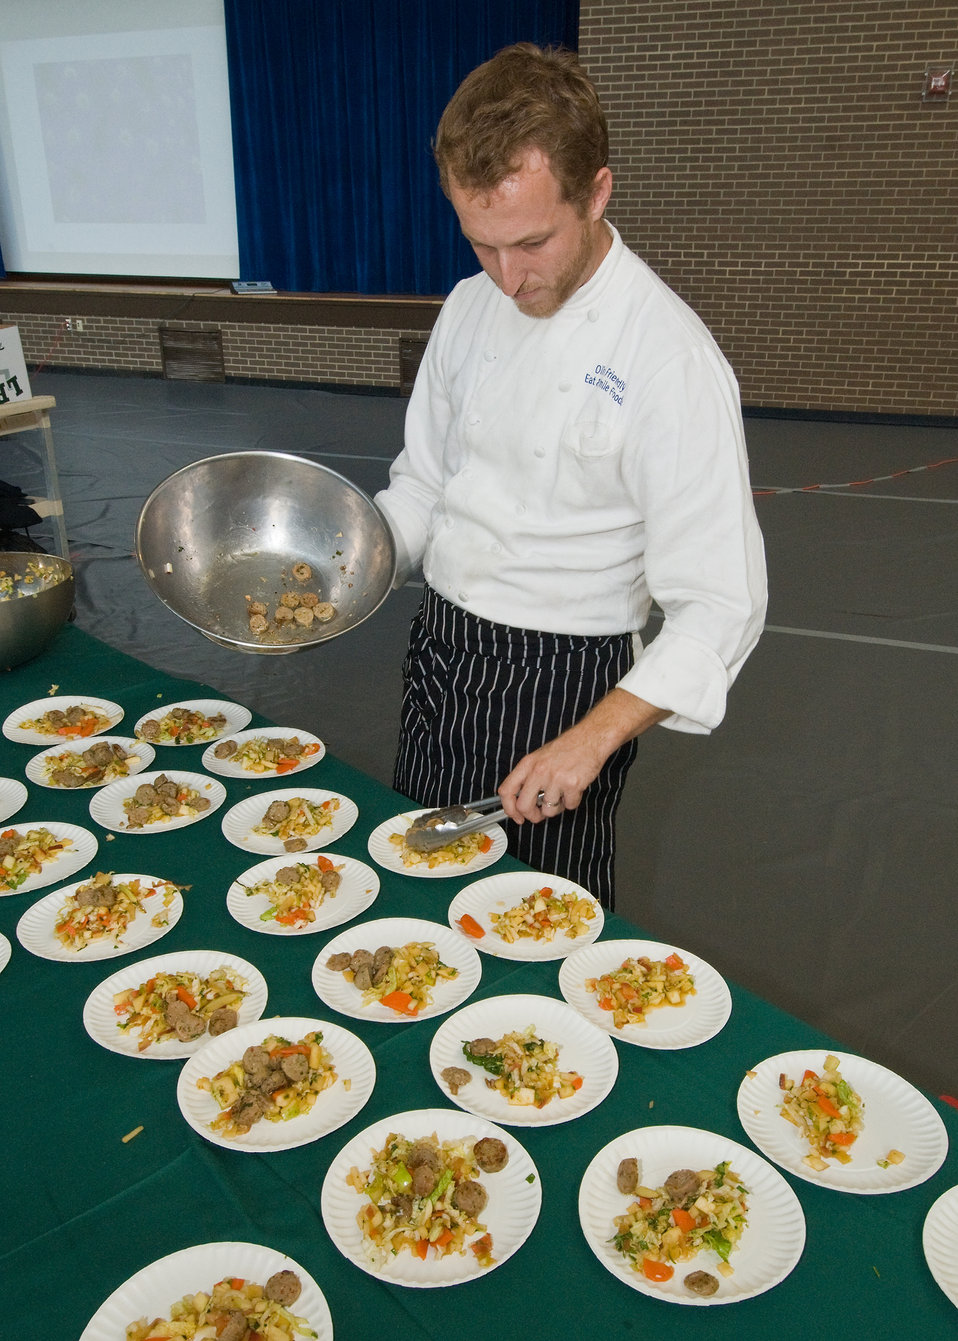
Chef Oliver Friendly, 'Eat and Smile Foods Catering' plates 'Spicy Apple Slaw with Chicken Sausage' for the Chef Competition of the D.C. Farm to School and D.C. School Garden Week at the Savoy Elementary and Thurgood Marshall Academy shared campus in Washington, DC, Tuesday, October 12, 2010. At the event local chef’s created healthy, delicious recipes using local apple varieties to be judged by the students themselves. School children and a partnership of community organizations have responded to First Lady Michelle Obama’s goal to end childhood obesity by building school gardens, providing healthier foods in school meals, and helping kids connect with local food and agriculture. USDA Photo 10di1522-59 by Bob Nichols.